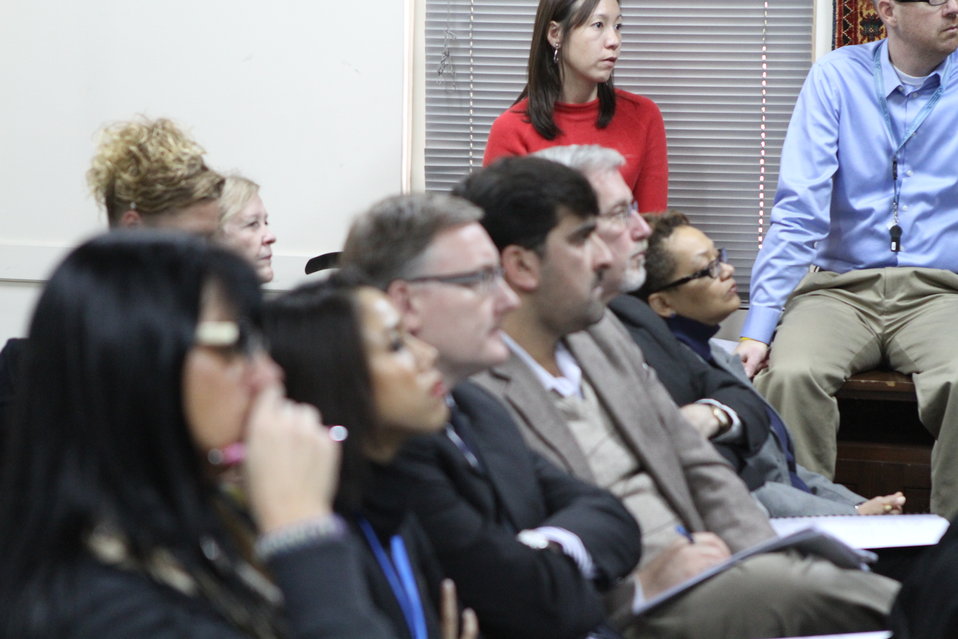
Presentation of the ACTA Civil Society analysis of the FY 1392 Afghan national budget